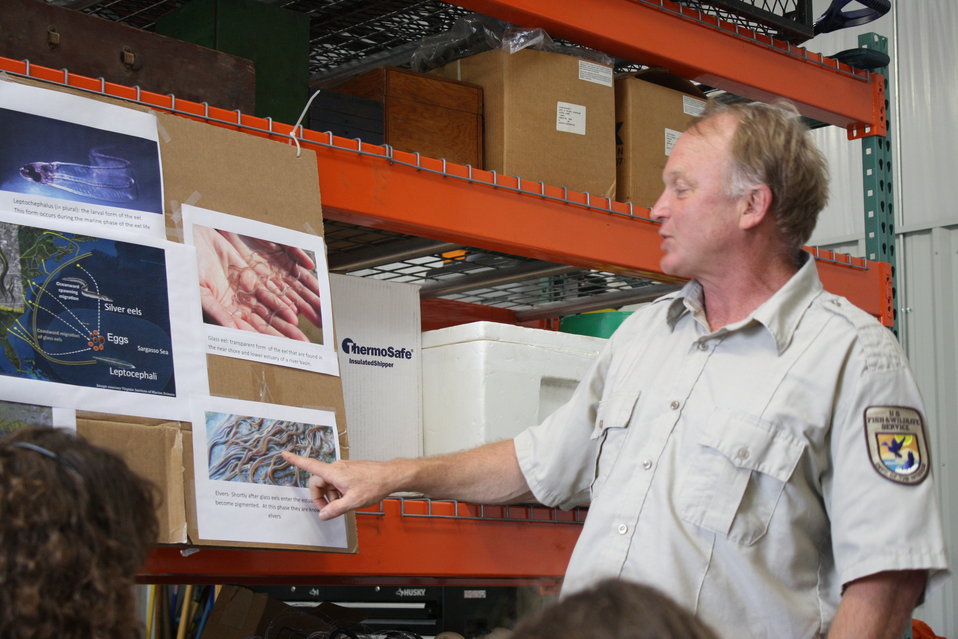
Nashua National Fish hatchery